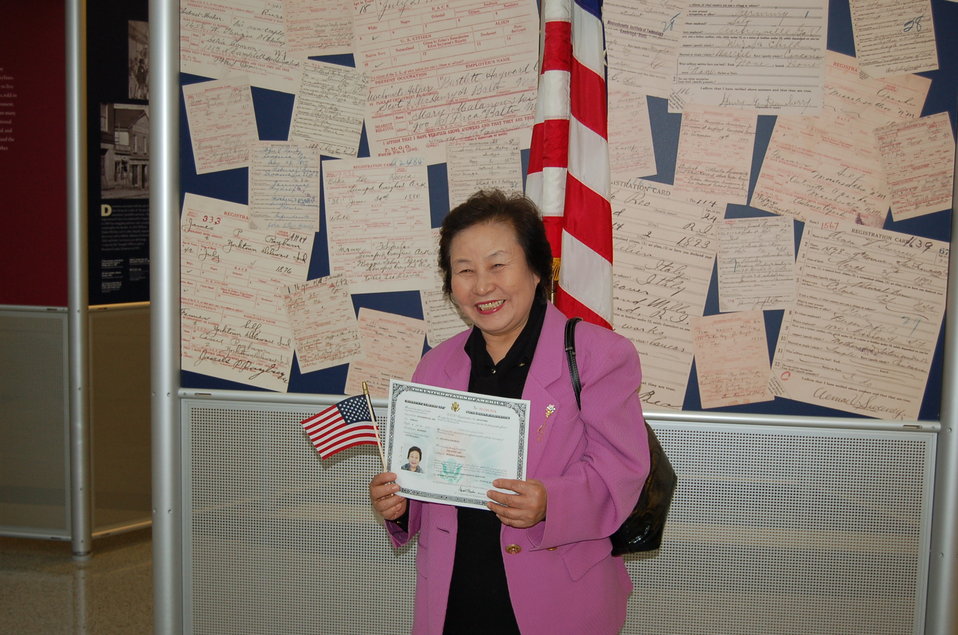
New Citizens